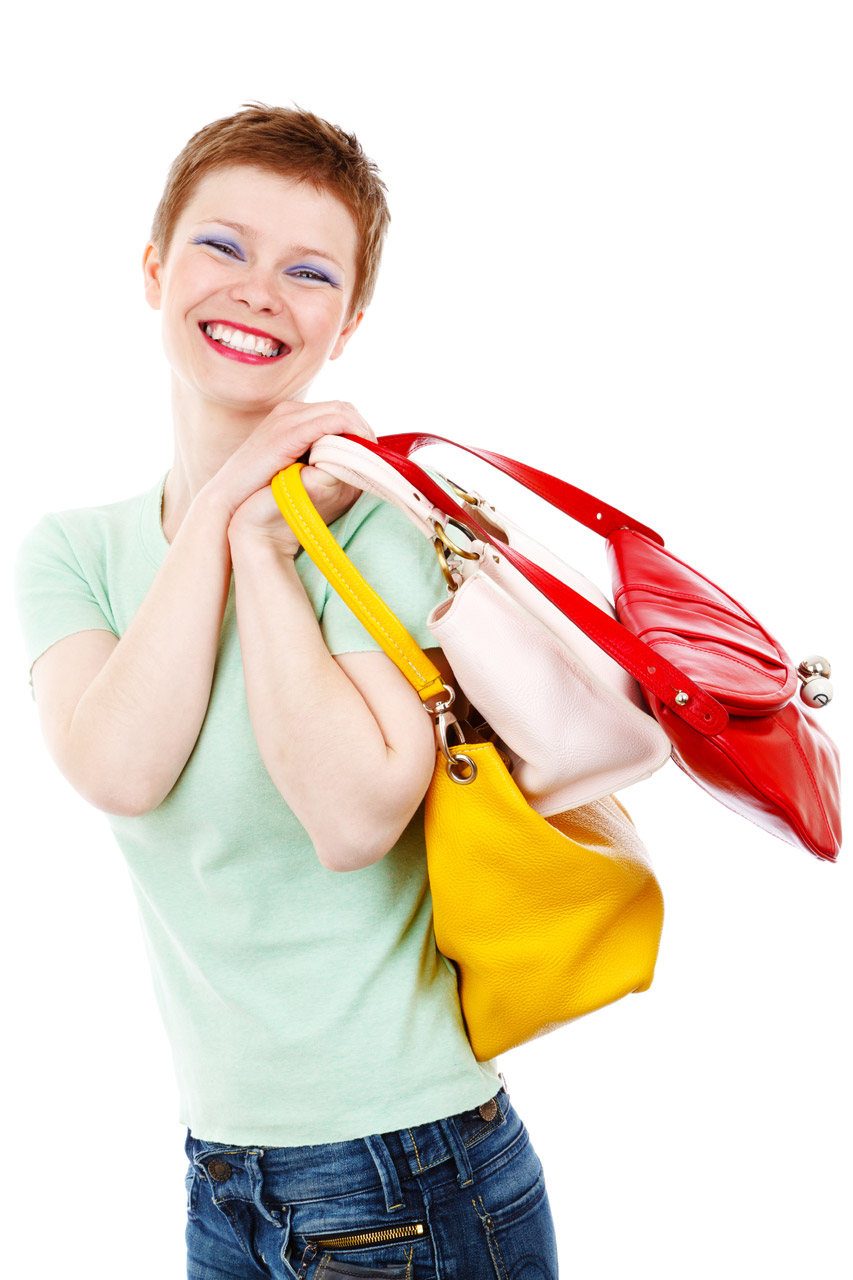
Smiling shopper with colorful bags isolated on white background - jana svojsova.